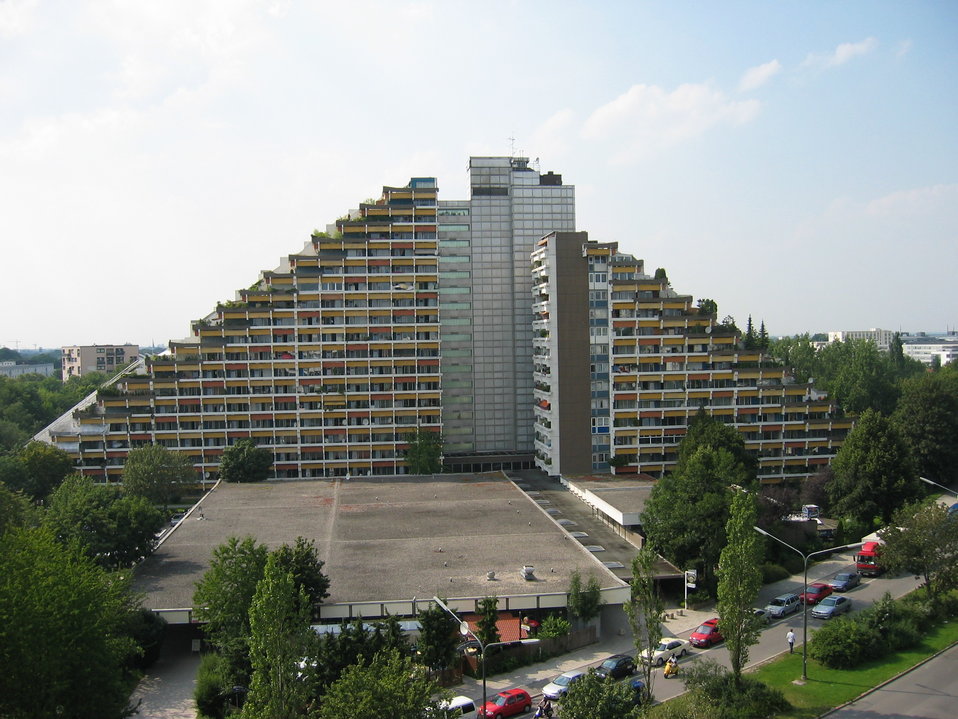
Deutsch: Das Pharao-Haus, Ostseite, in München. Pharao-Haus (Pharao-Building), East Viewing, in Munich, Bavaria.